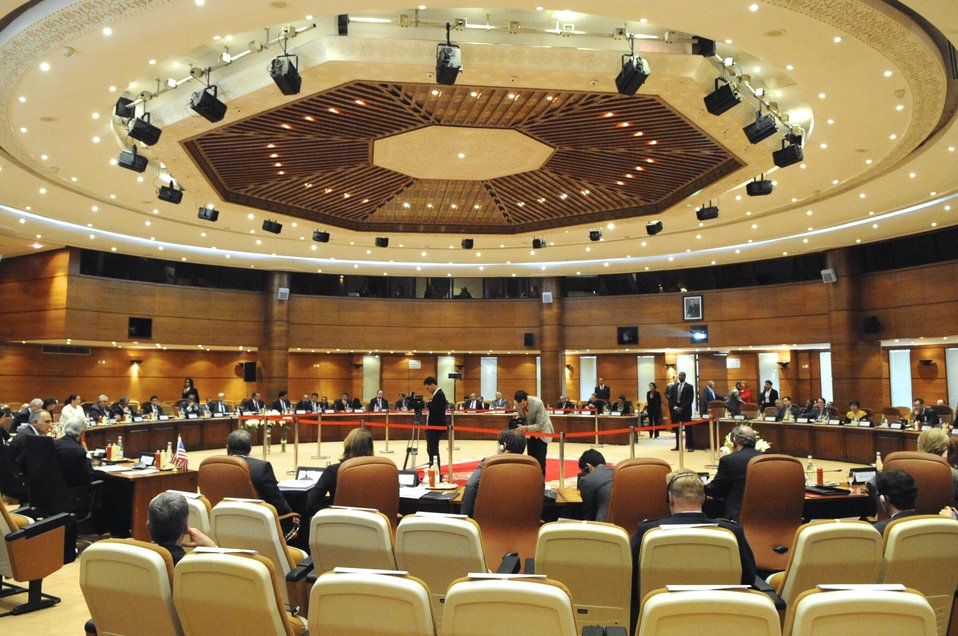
Secretary Kerry and Moroccan Foreign Minister Participate in Strategic Dialogue

U.S. Secretary of State John Kerry and Moroccan Foreign Minister Salaheddine Mezouar participate in a Strategic Dialogue between their two countries in Rabat, Morocco on April 4, 2014.